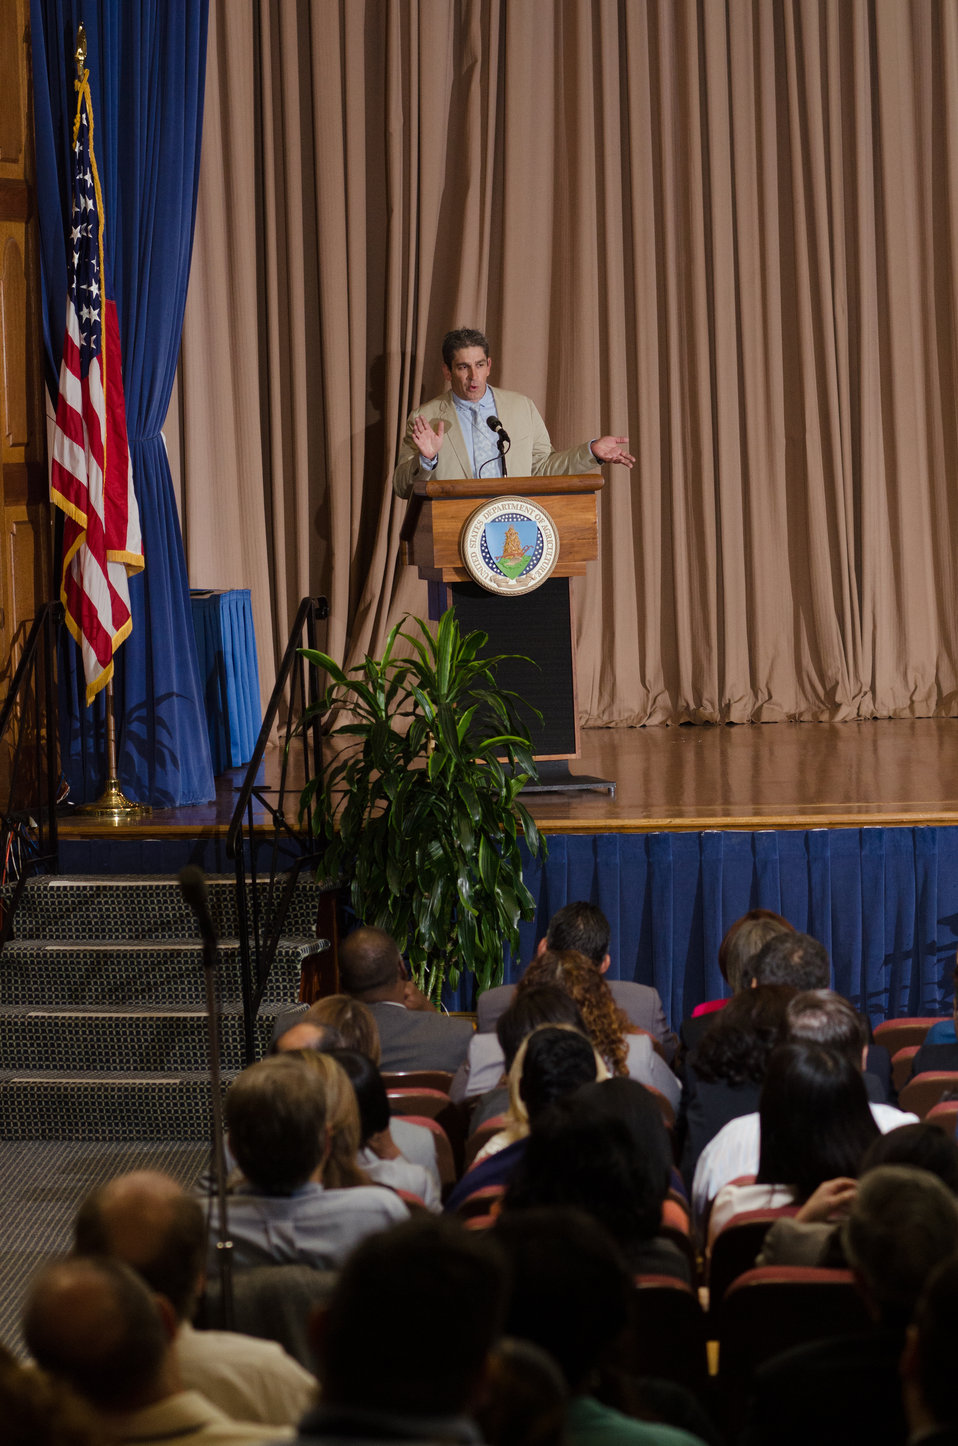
Keynote Speaker Poet Richard Blanco talks about differences in culture, language, and his childhood,at the 2013 National Hispanic Heritage Month ”Hispanics: Serving and Leading our Nation with Pride and Honor,” on Thursday, Sept. 19, 2013, in the Jefferson Auditorium, USDA Headquarters, Washington, D.C. Mr. Blanco stands as the youngest, first Latino, and first openly gay person to serve as the Presidential inaugural poet, on January 21 of this year.